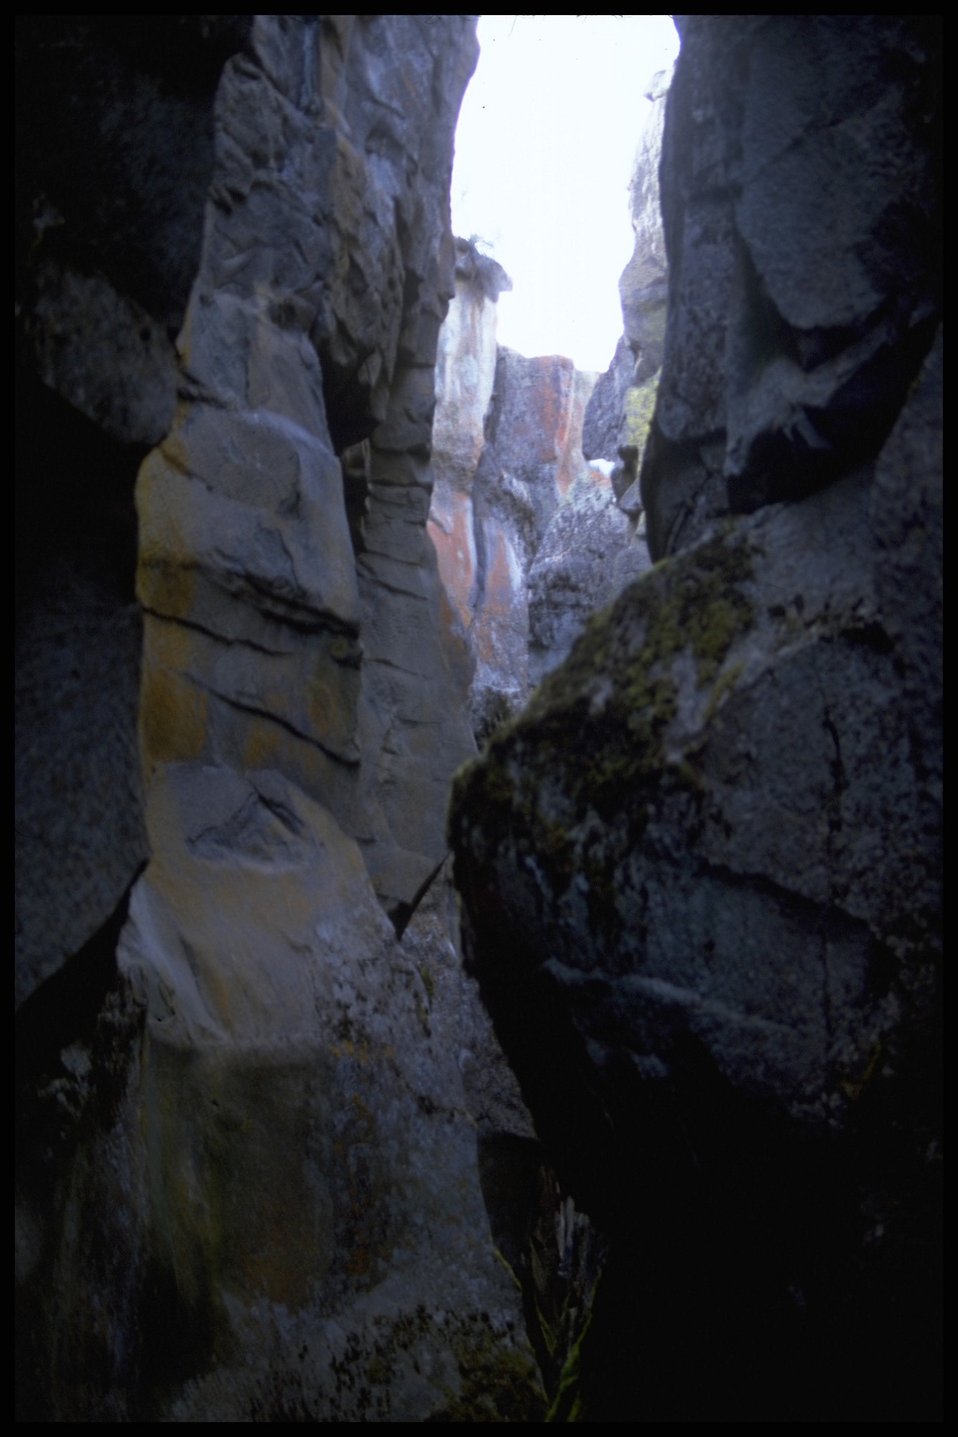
Scenic view of "Crack in the Ground", Lakeview District.